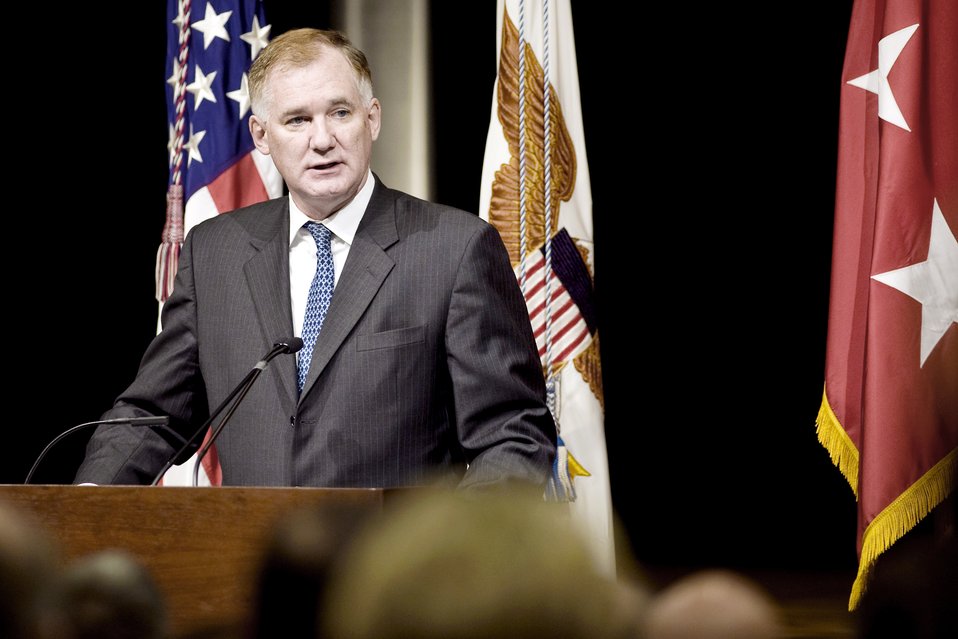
JIEDDO

Deputy Secretary of Defense William J. Lynn III addresses the audience during the Joint Improvised Explosive Device Defeat Organization change-of-directorship ceremony at the Pentagon, Dec. 30, 2009. Mr. Lynn hosted the ceremony.